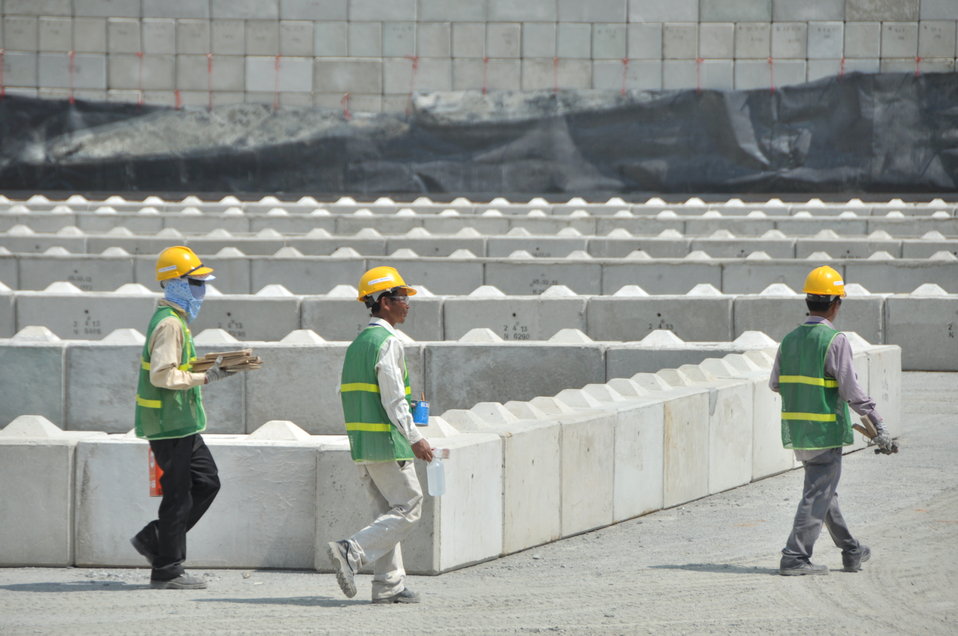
Media Tour of Environmental Remediation of Dioxin Contamination at Danang Airport

Danang, Vietnam
April 24, 2013